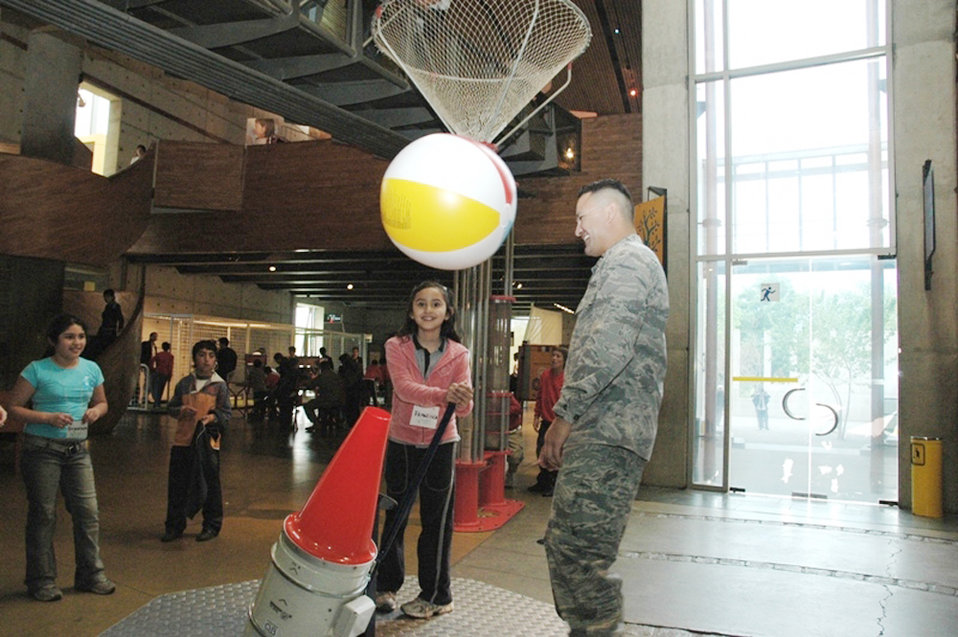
Airmen spend day with Chilean children

Capt Randy Saldivar assists a young girl with a display at an interactive science museum Oct. 13, 2009, in Santiago, Chile. Airmen were in Santiago conducting a subject matter exchange with the Chilean air force as part of Air Forces Southern's ongoing Cooperation Team-One initiative and decided to use their first day in country to sponsor a group of at-risk children during a trip to a local science museum. Captain Saldivar is a public affairs officer with the Texas Air National Guard.